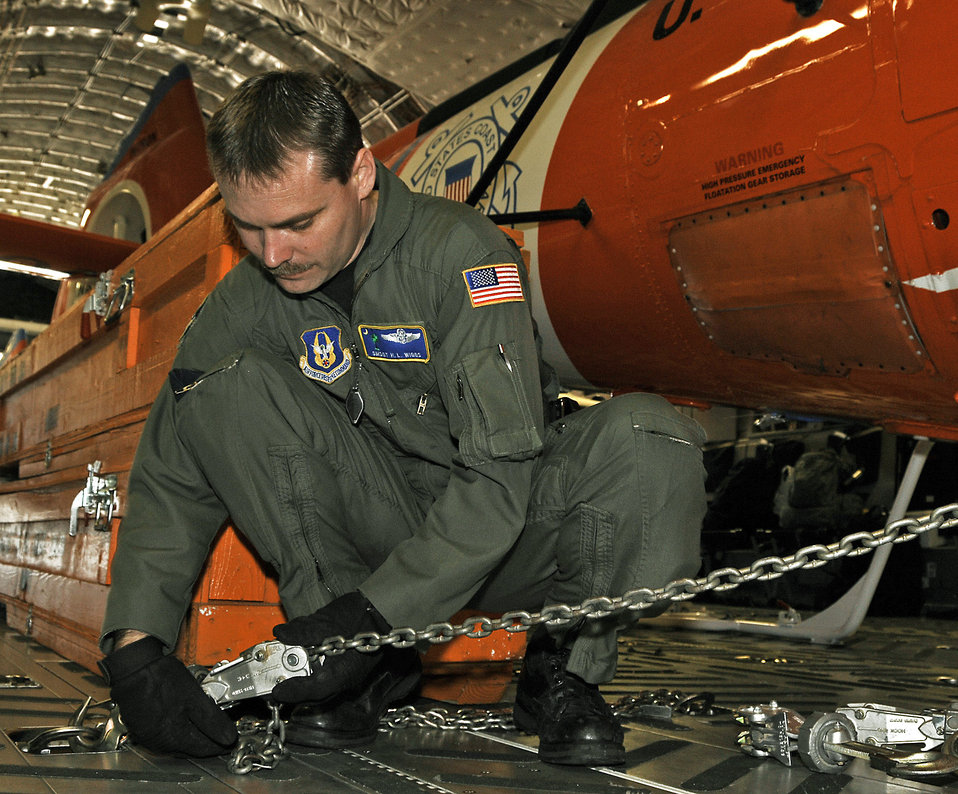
Moving the Coast Guard

Senior Master Sgt. H. L. Wiggs helps secure a Coast Guard helicopter aboard a C-17 Globemaster III April 7 at Charleston Air Force Base, S.C. The helicopters were delivered to Central America for missions there. Sergeant Wiggs is a reservist with the 701st Airlift Squadron.